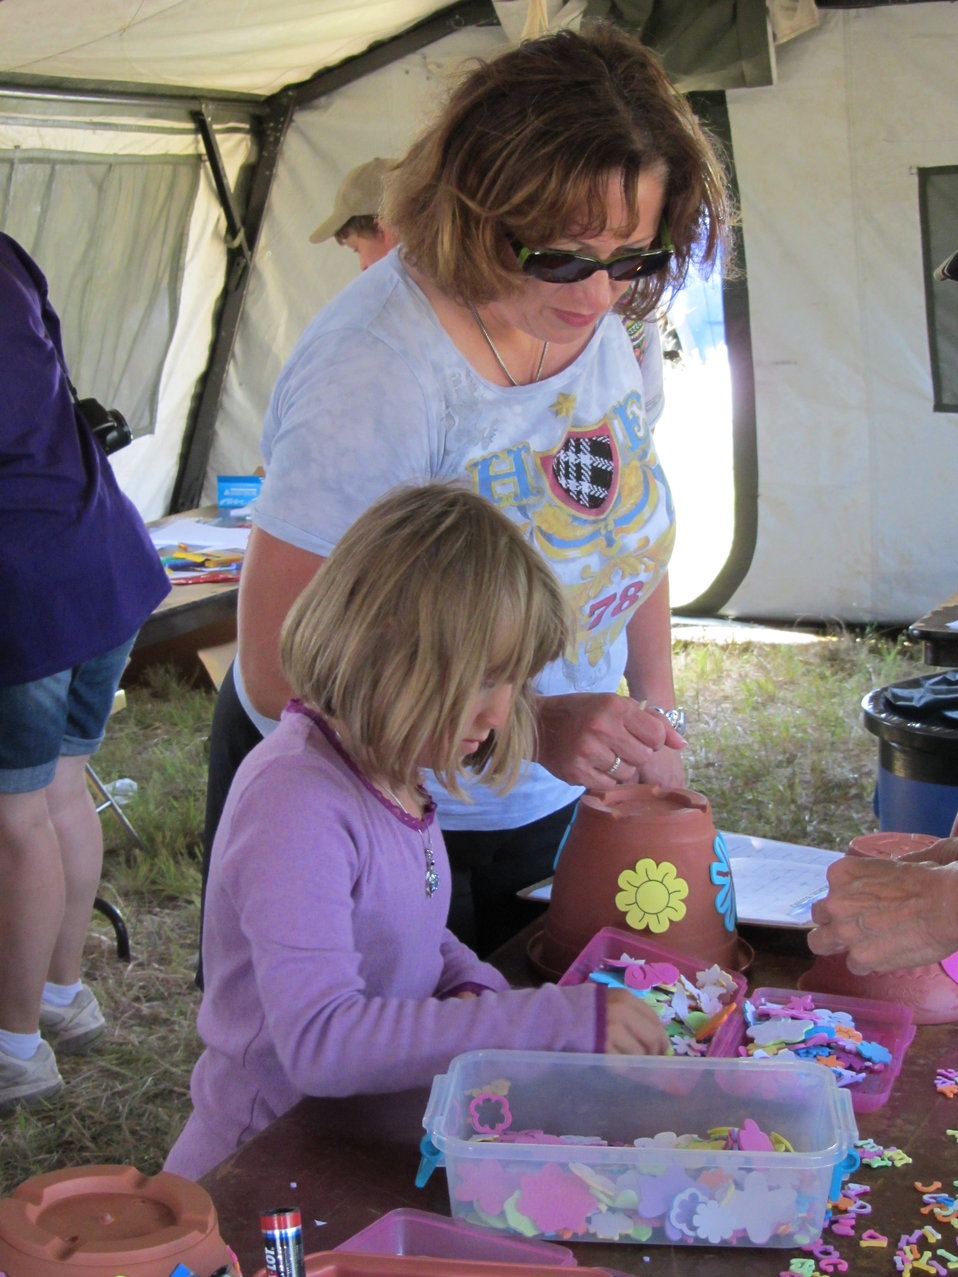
2011 Huron Prairie Fest